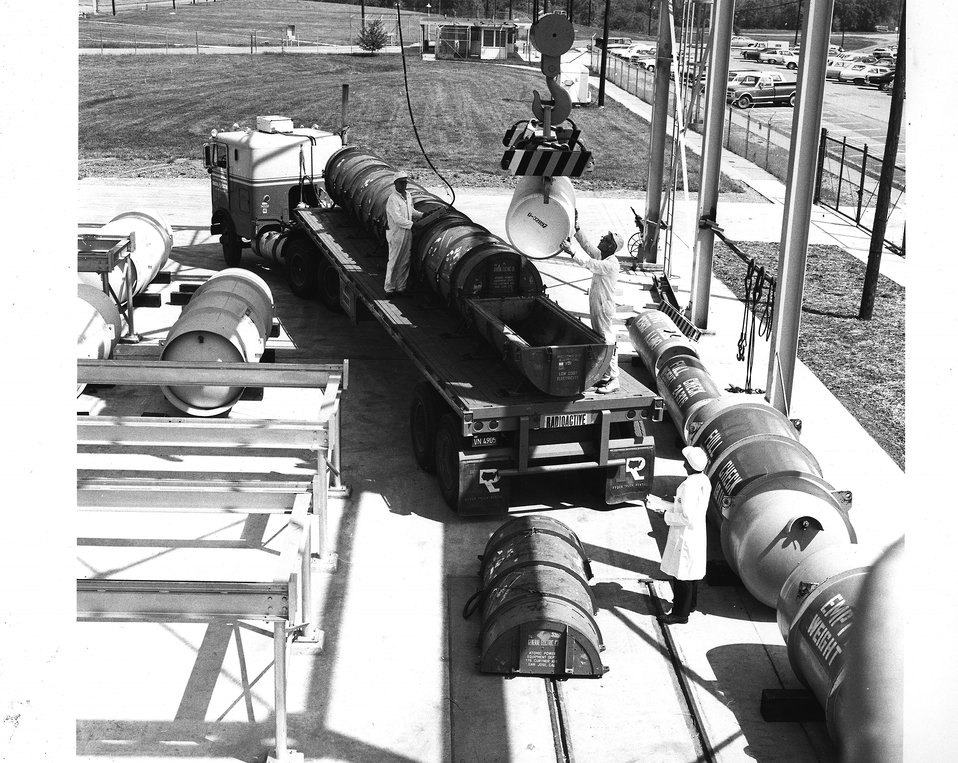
Workmen at the Oak Ridge Gaseous Diffusion Plant load a cylinder of uranium hexaflouride, enriched in uranium-235 for shipment. c. 1969